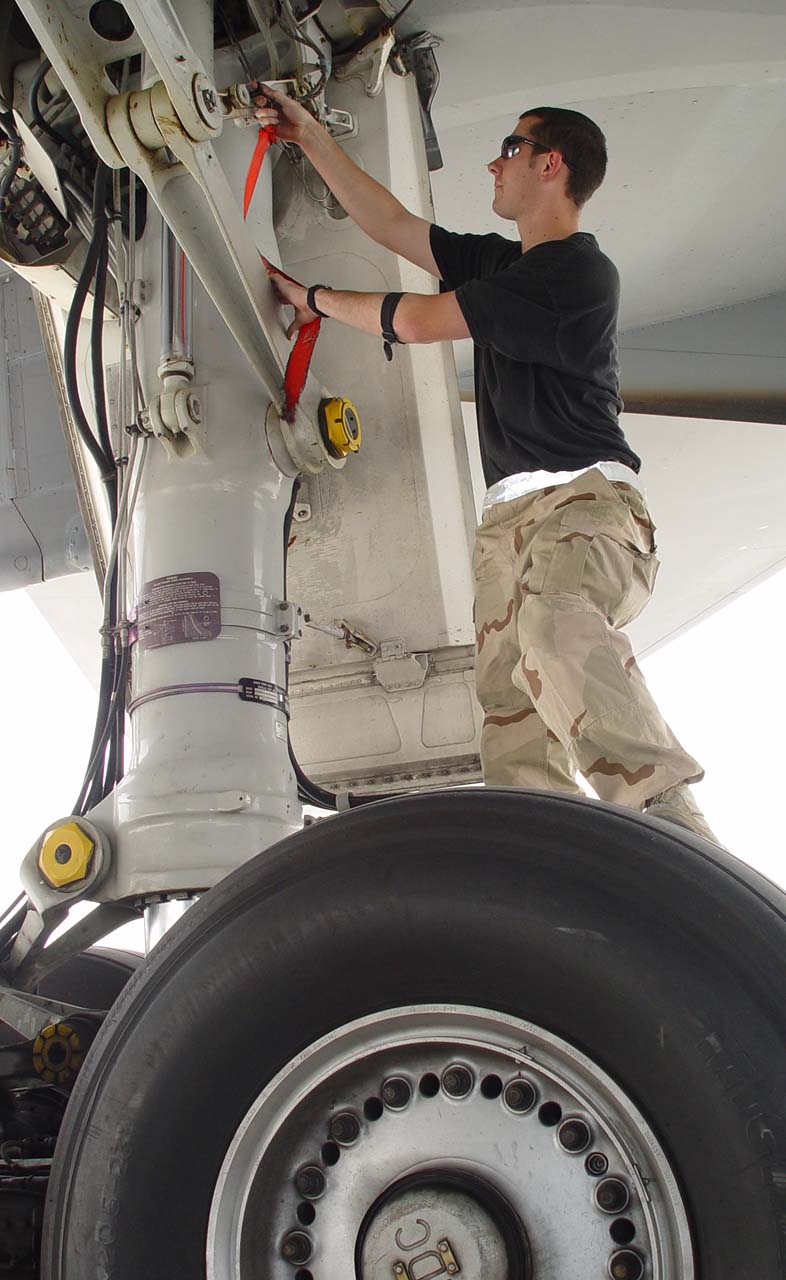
Keeping refuelers in air

SOUTHWEST ASIA -- Airman 1st Class Michael Shirey places landing gear downlock pins on a KC-10 Extender aircraft. He is assigned to the 380th Expeditionary Aircraft Maintenance Squadron at a forward-deployed location.